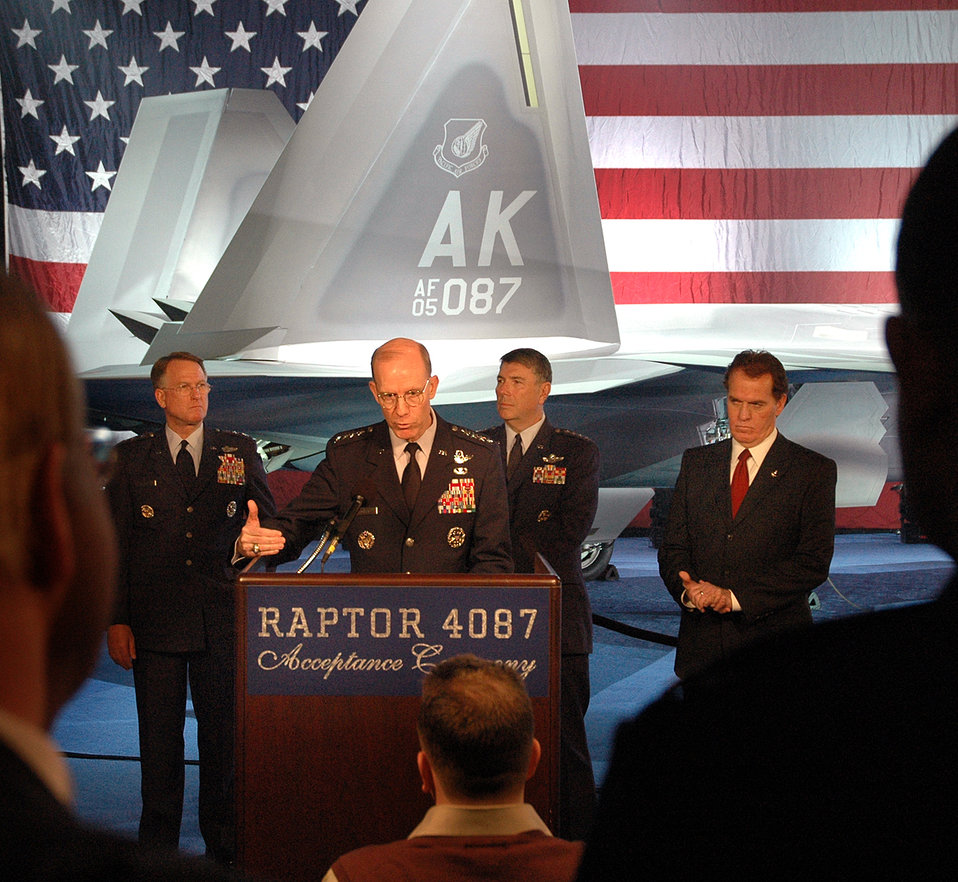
First F-22 bound for Pacific unveiled

Gen. John D.W. Corley, the vice chief of staff from Headquarters U.S. Air Force, speaks during the acceptance ceremony for Pacific Air Force's first F-22 Raptor Feb. 12 at Marietta, Ga. This F-22 is the first of several that will be assigned to PACAF at Elmendorf Air Force Base, Alaska. The F-22's combination of stealth, supercruise, maneuverability, and integrated avionics, coupled with improved supportability, represents an exponential leap in warfighting capabilities.